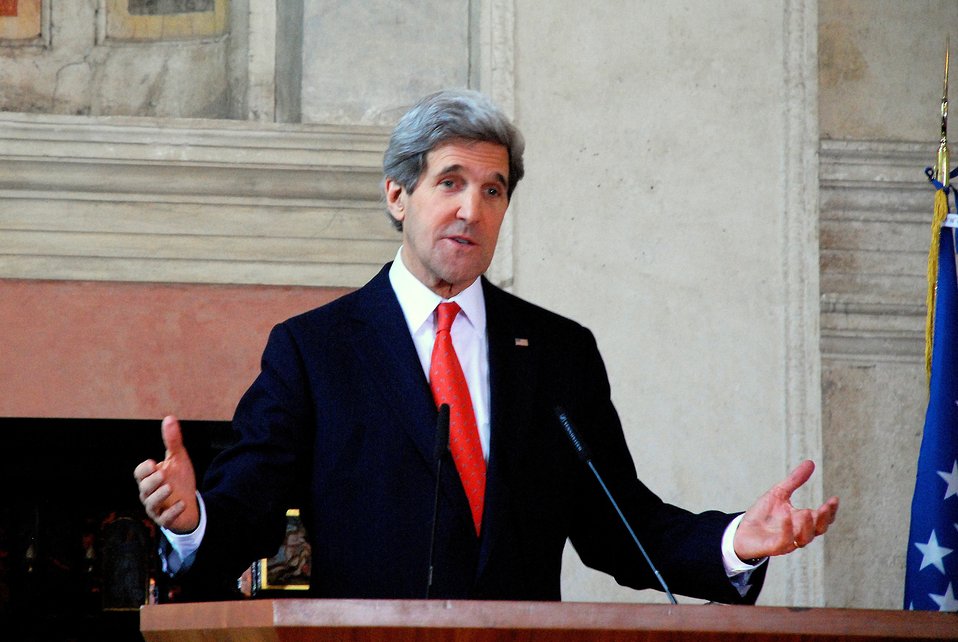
Secretary Kerry Addresses Reporters

U.S. Secretary of State John Kerry addresses reporters in Rome, Italy, on February 28, 2013.